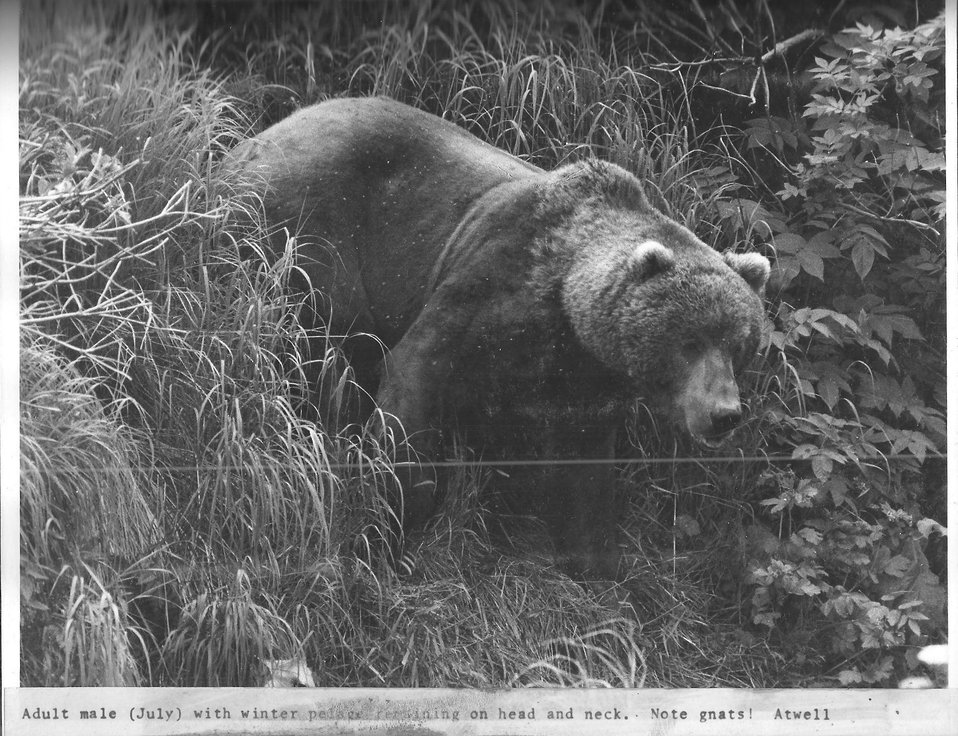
(1971) Note the Gnats

Credit: USFWS

Source and Contact: Kodiak National Wildlife Refuge